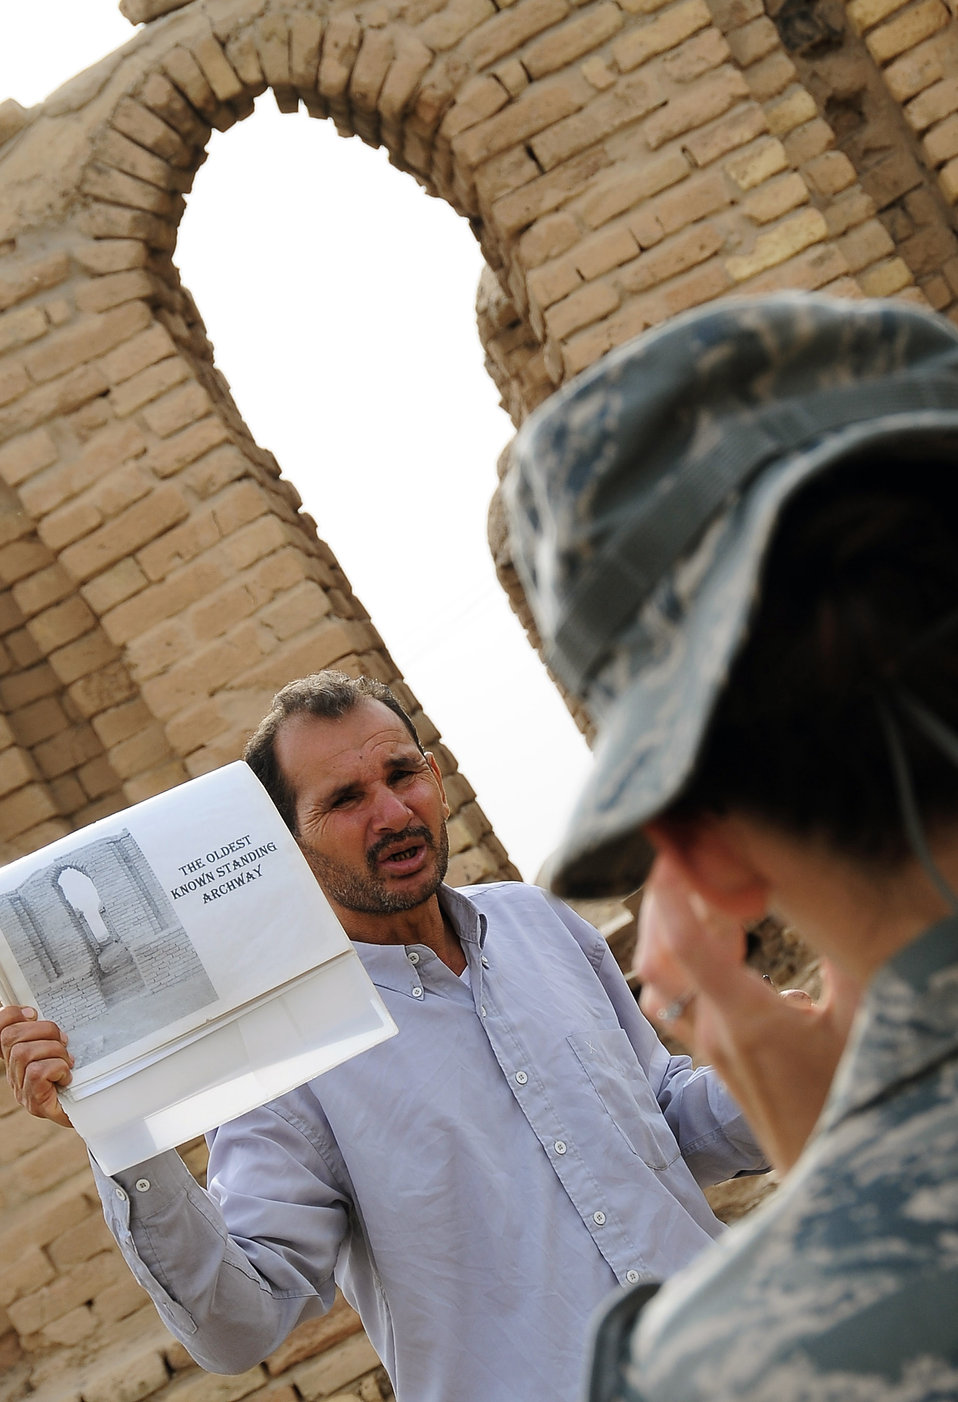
Oldest archway

Dhaif Muhsen, an Iraqi Ministry of Antiquities curator, explains Feb.9 the history of the oldest known standing archway in the world located in the ancient city of Ur near Ali Base, Iraq. Members of the 407th Air Expeditionary Group Chaplain's Office offer weekly tours.